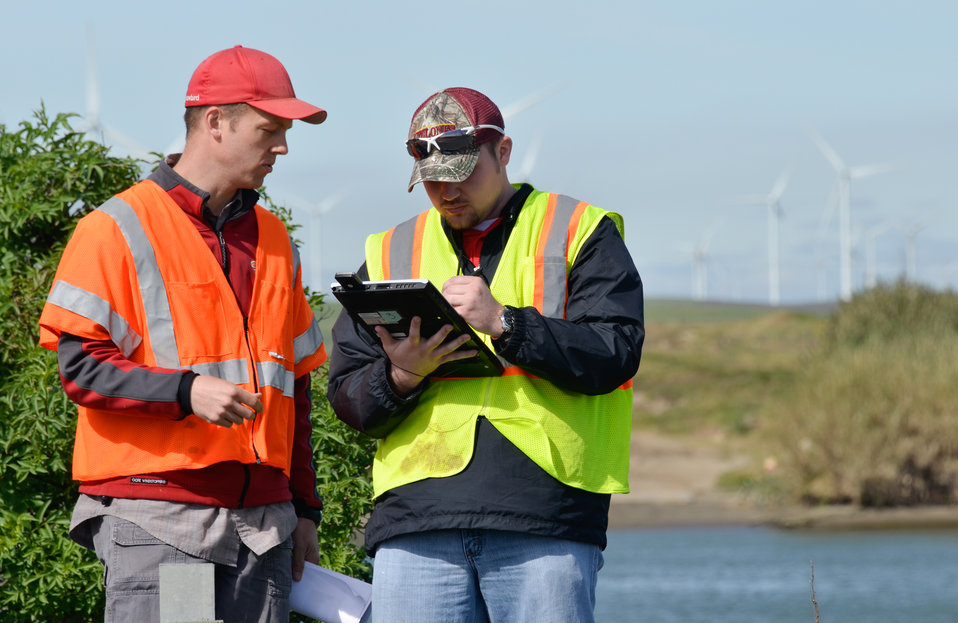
Inspecting a Sacramento River levee

Levee inspectors Ryan Larson (left) and Nate Meisgeier, both with the U.S. Army Corps of Engineers Sacramento District, document findings of a routine levee inspection on the Sacramento River near Rio Vista, Calif., March 27, 2013. The results of U.S. Army Corps of Engineers levee inspections determine continued eligibility for federal aid in repairing levees damaged by floods or storms, and help communities understand and make informed decisions about their flood risk. Corps inspectors document all maintenance issues with GPS coordinates and photographs to help agencies that maintain levees prioritize and fix issues as quickly as possible.